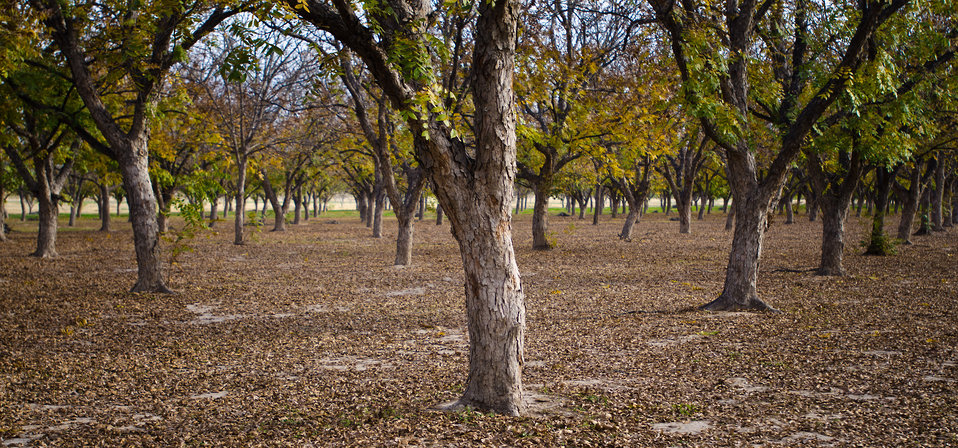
Arrowhead Farms of Crystal City, TX, on Friday, December 9, 2011, has been owned by Mr. Akram Mohammad, a pecan farmer since 2005. The 719 acre farm with 10,000 trees, features some orchards with underground micro irrigation system that feeds water to the roots of 4,380 pecan trees on 146 acres. Mr. Mohammad said, “USDA (U.S. Department of Agriculture) was essential to my business and trees surviving the recent exceptional drought. The trees were stress free thanks to underground micro-irrigation. This is essential to the future growth of Texas agriculture and good for America.” U.S. Department of Agriculture’s (USDA) Environmental Quality Initiative Program (EQIP) awarded Mr. Mohammad a $130,000 grant in 2008. He provided $26,000 for the balance of the $156,000 total cost to install a 146-acre underground micro-irrigation for 4,380 trees.